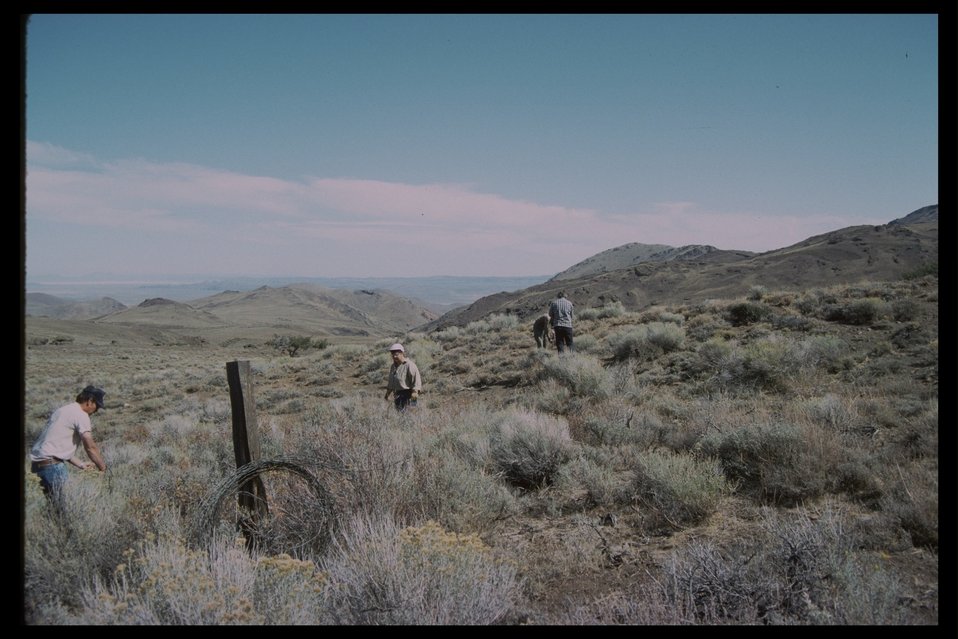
Pueblo Mountain Sierra Club volunteers (4) remove a fence. (WSA 2-81)